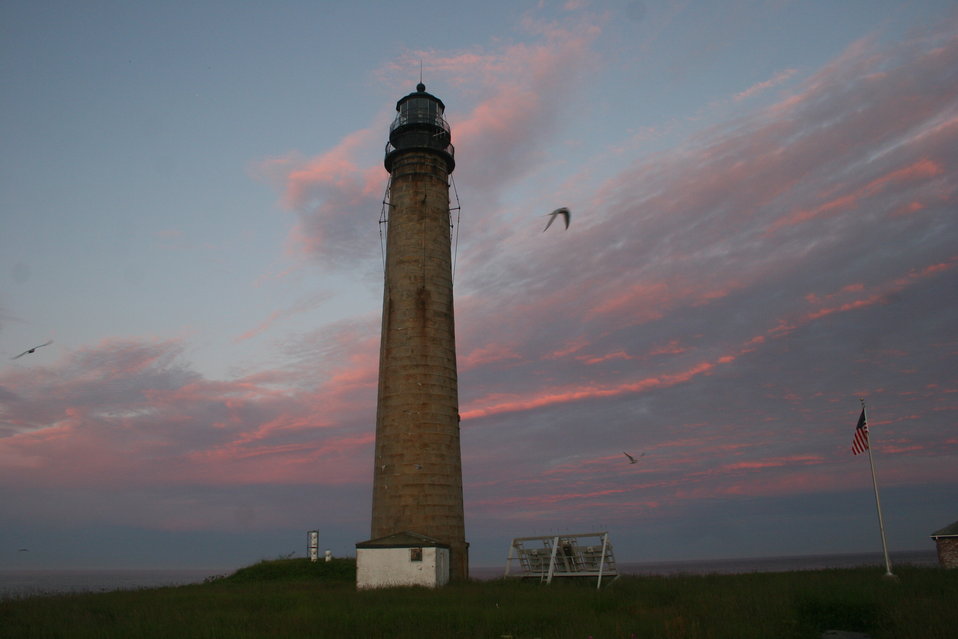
Lighthouse At Sunset